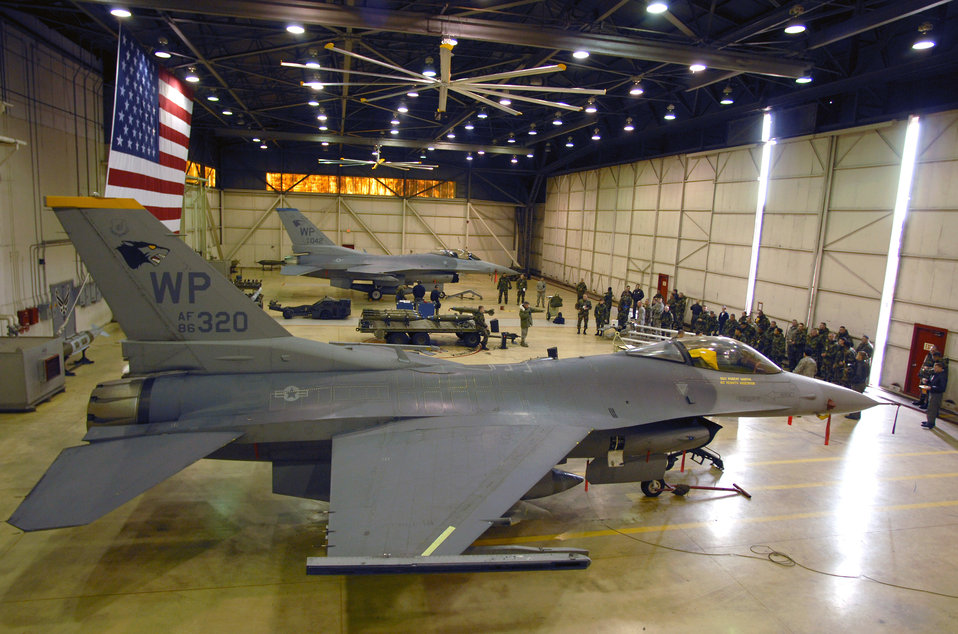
Heavy metal

Airmen gather to watch a weapons load competition Dec. 14 at Kunsan Air Base, South Korea. Load crews from the 35th and 80th Fighter squadrons competed in the final load competition for 2007.